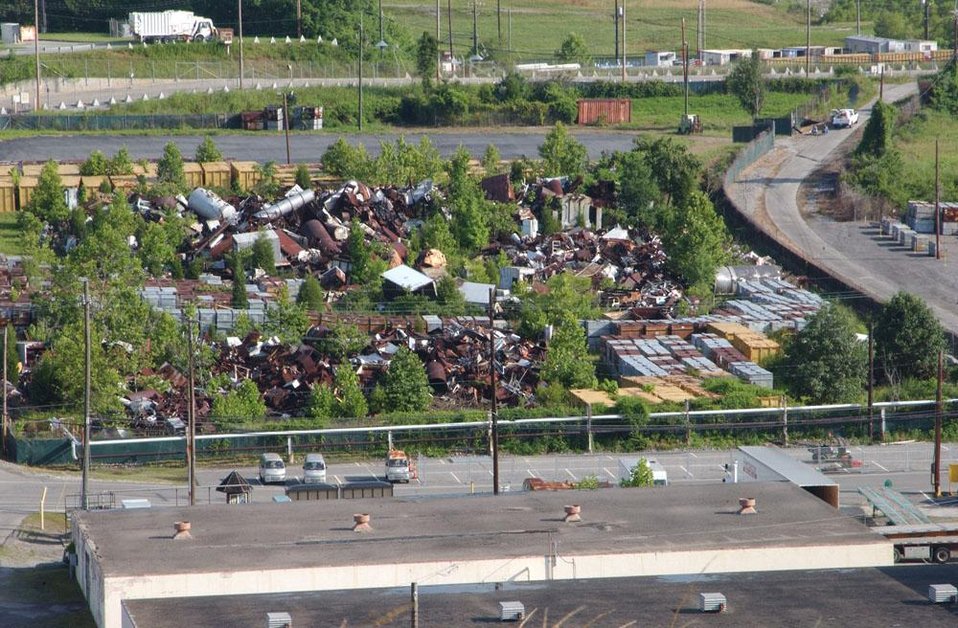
Before Photo Old Salvage Yard

With Recovery Act funds, the Y-12 National Security Complex was able to clear the seven-acre Old Salvage Yard. The scrap yard contained scrap metal from decades of past operations.